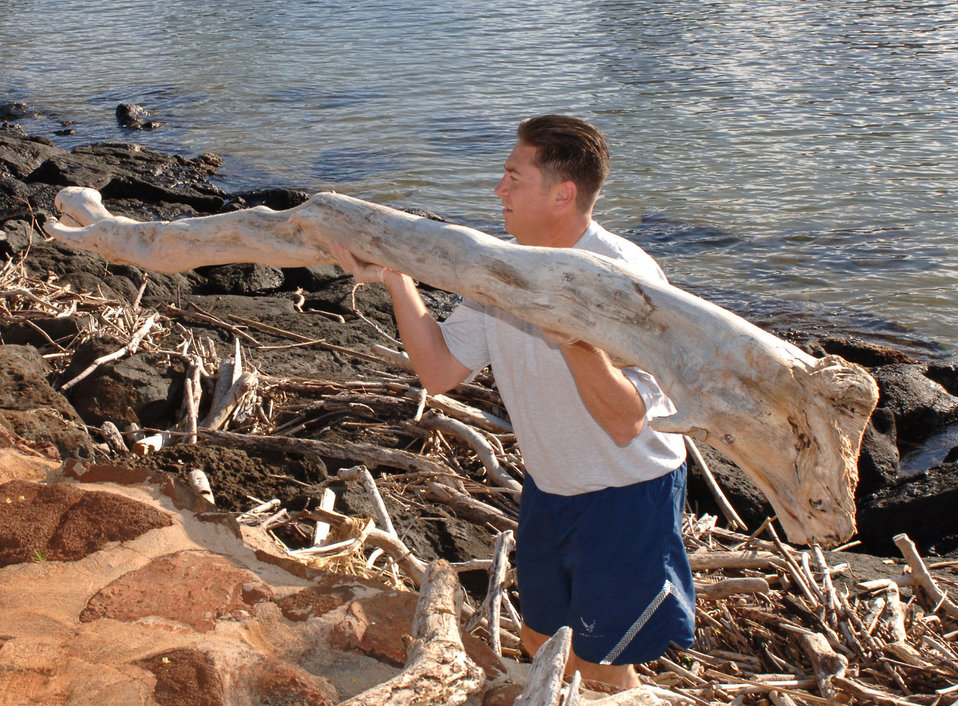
Hickam Airmen serve Oahu community during Jungle Day

Senior Master Sgt. Terry Rishty heaves a driftwood log as he cleans trash and debris from the rocky shoreline March 13 along Ala Moana Beach Park in Honolulu. Airmen from 13th Air Force at Hickam Air Force Base volunteered for the beach cleanup as part of the organization's Jungle Day, a tradition for the unit that occurs every Friday the 13th.